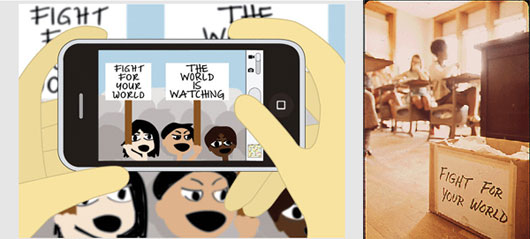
Document Your Environment Student Contest Winner

'Then' Documerica Photo: June, 1972 'Children in Fort Smith [Arkansas] are Learning That Protecting the Environment Will Take More Than Awareness' by Jim Olive.

'Now' Image: “iRevolution,” by Anna Lee of San Francisco, CA. Her submission, inspired by this 1972 DOCUMERICA photo, won the Grand Prize of the 2011 Document Your Environment student contest. The U.S. National Archives ran this contest with support from EPA through challenge.gov. Read more

The graphic arts category was judged by Michael Philip Manheim, one of the original DOCUMERICA photographers. Submissions were also received for poetry and video responses to Documerica images.

We hope to run this contest again in 2013. Stay up to date at www.epa.gov/stateoftheenvironment